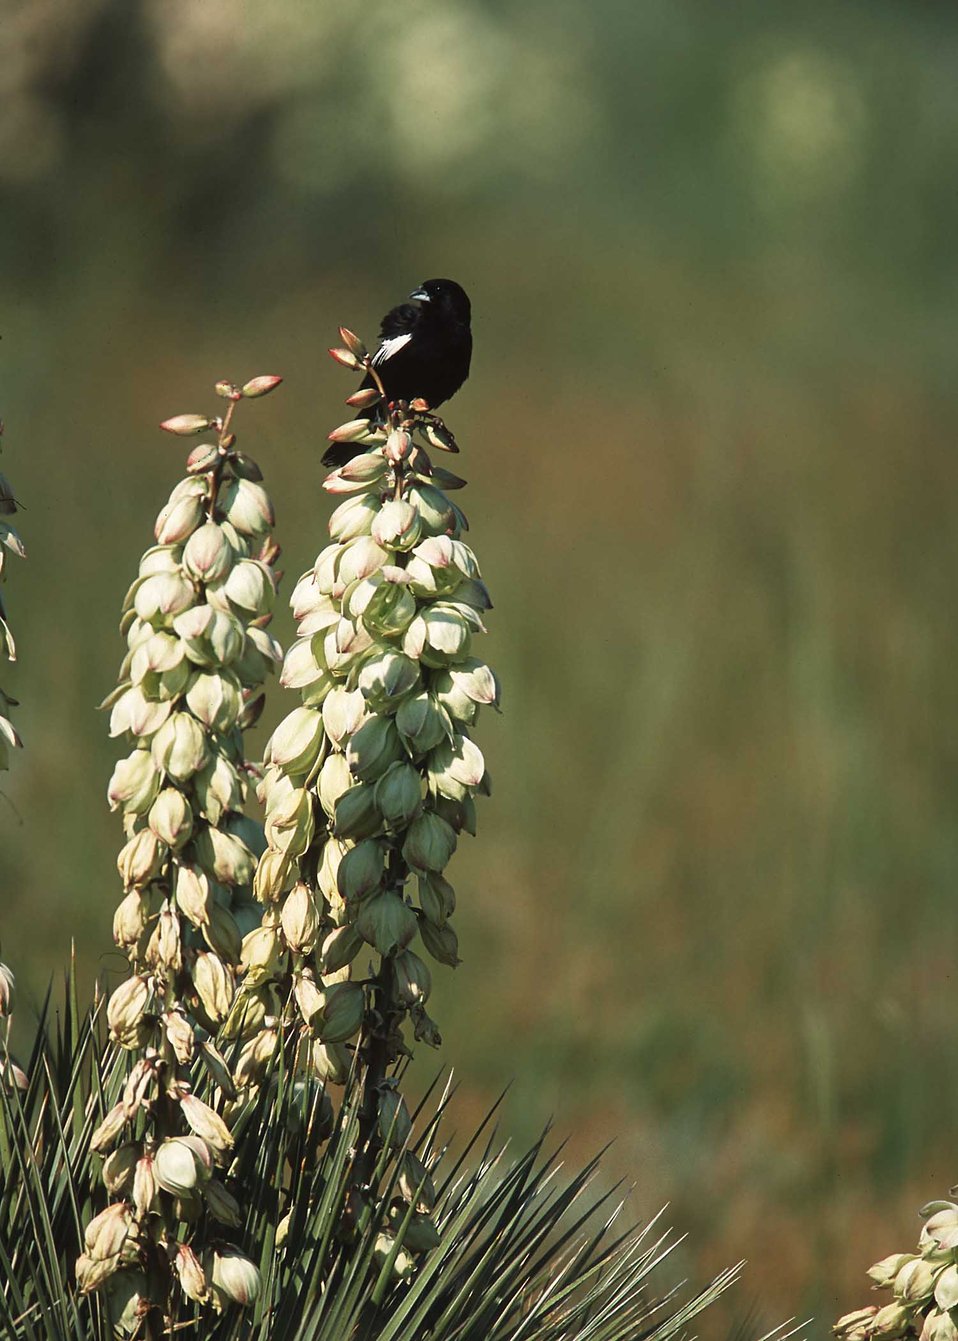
Lark Bunting on Spanish Bayonette (Cholla).